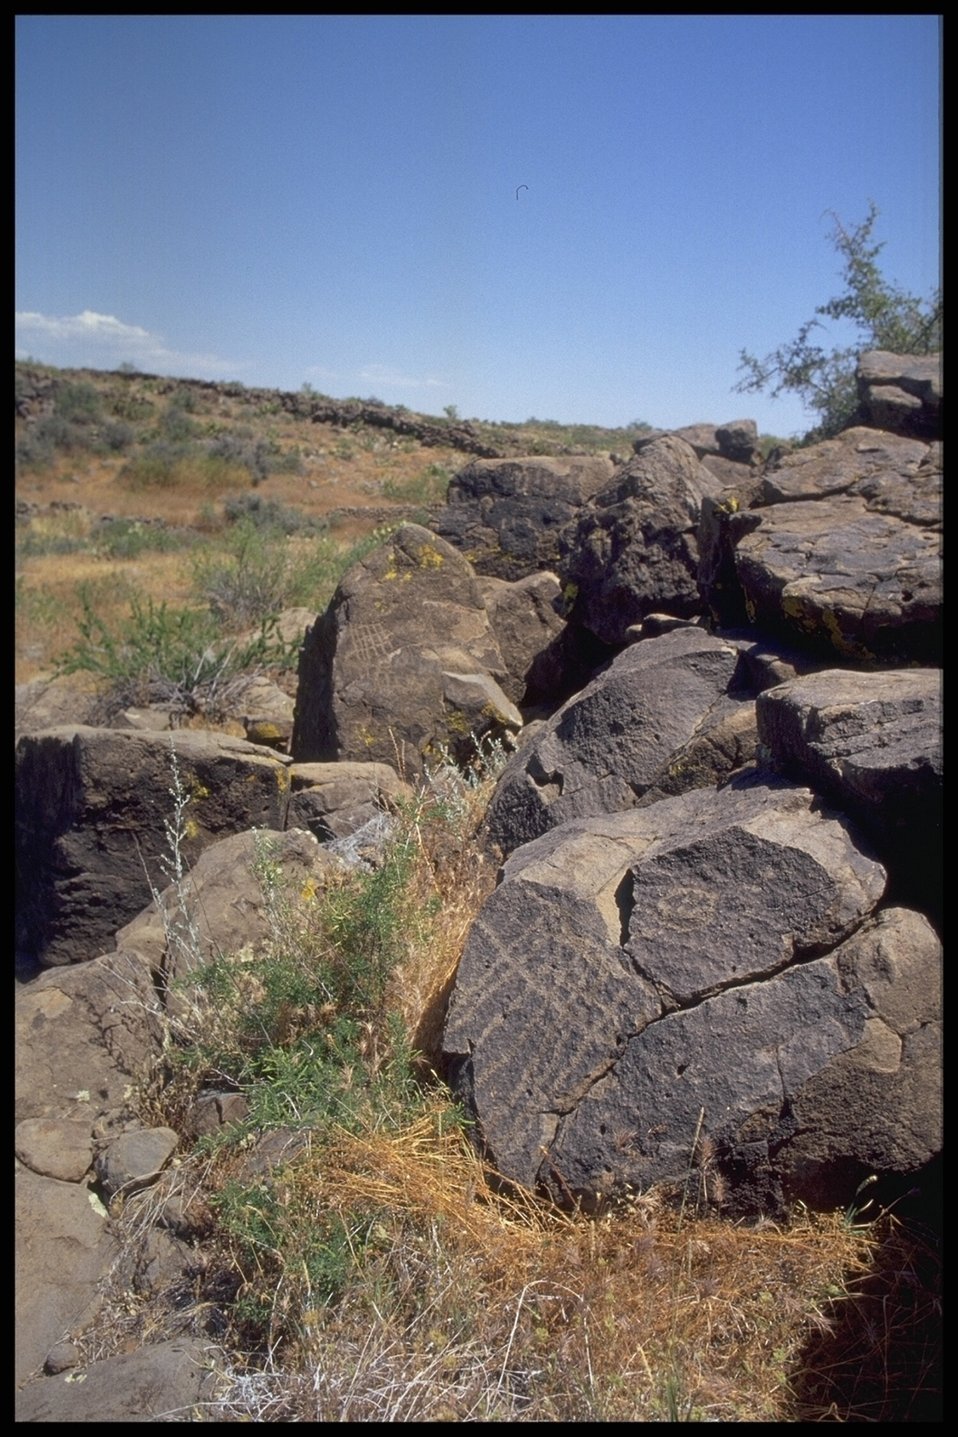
Agua Fria National Monument area.